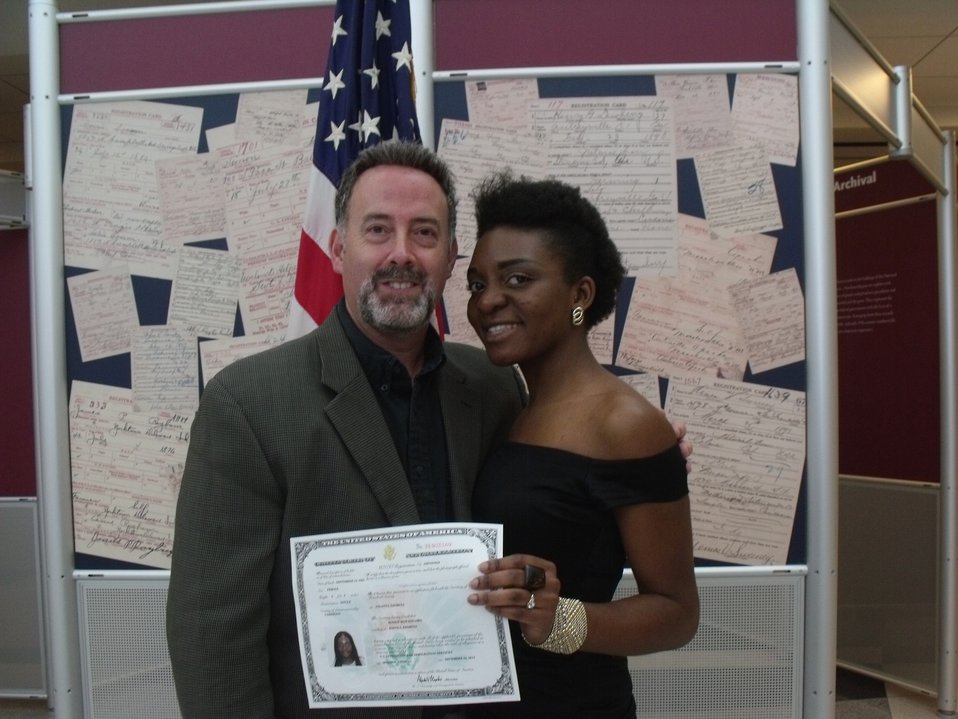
New Citizens